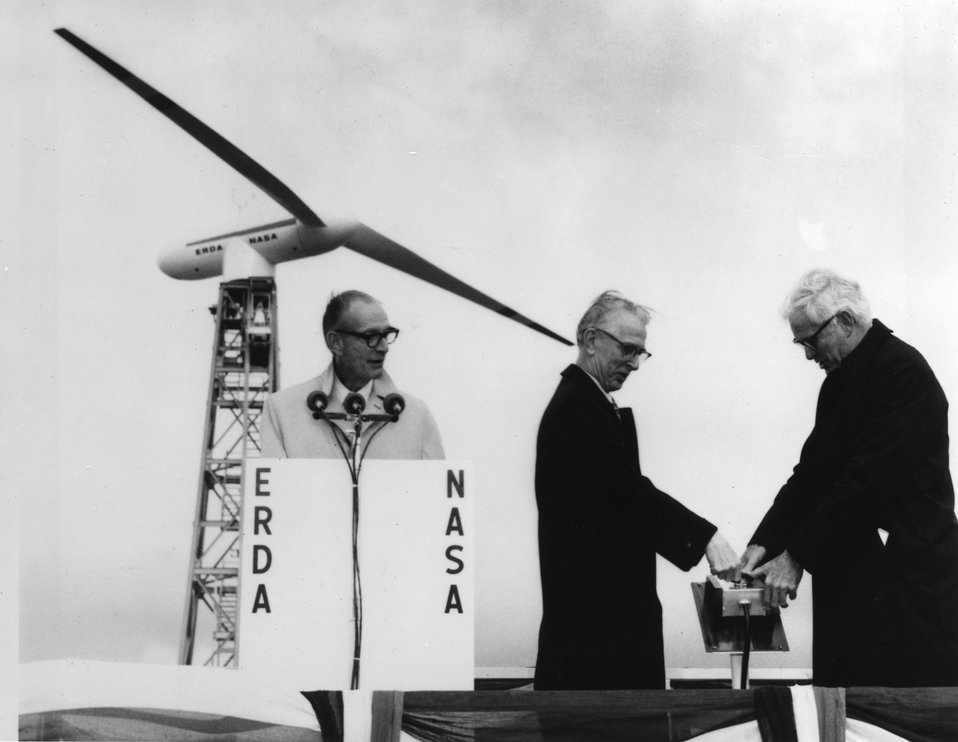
A newly dedicated 100 kilowatt wind turbine at Sandusky, Ohio, is using fall winds to generate data on operating and economic characteristics of wind energy systems for the generation of electric power. c. 1975